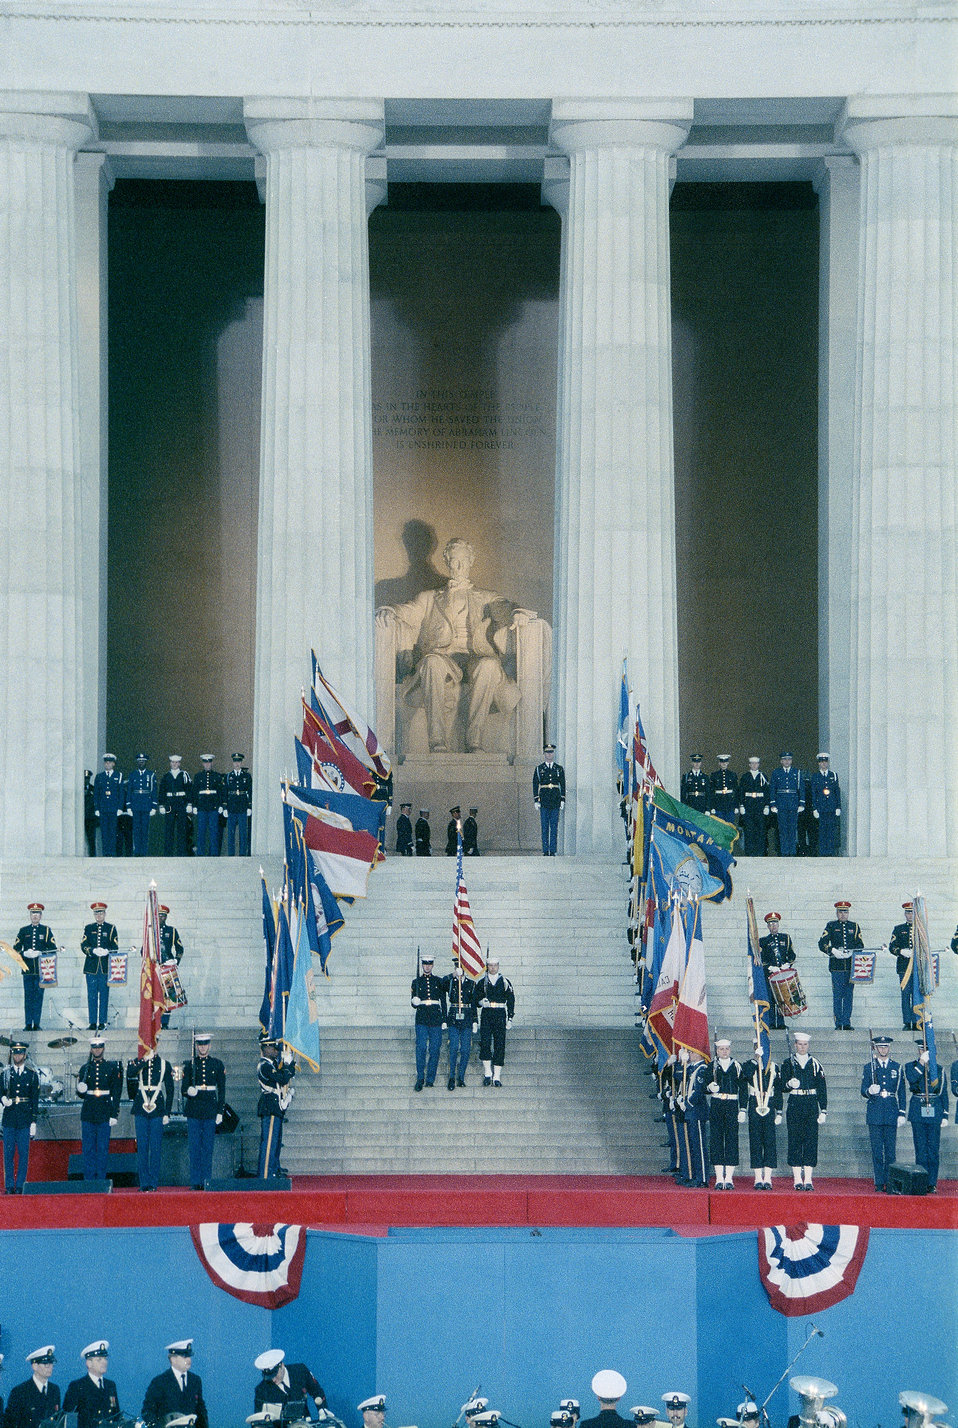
Description: 89-2821.15, 1989 Presidential Inauguration, George H. W. Bush, Opening Ceremonies, at Lincoln Memorial, from 35mm color negative. Creator/Photographer: Jeff Tinsley Medium: C-type print Culture: American Date: 1989 Persistent URL: [1] Repository: Smithsonian Institution Archives/Smithsonian Photographic Services Accession number: 89-2821.15